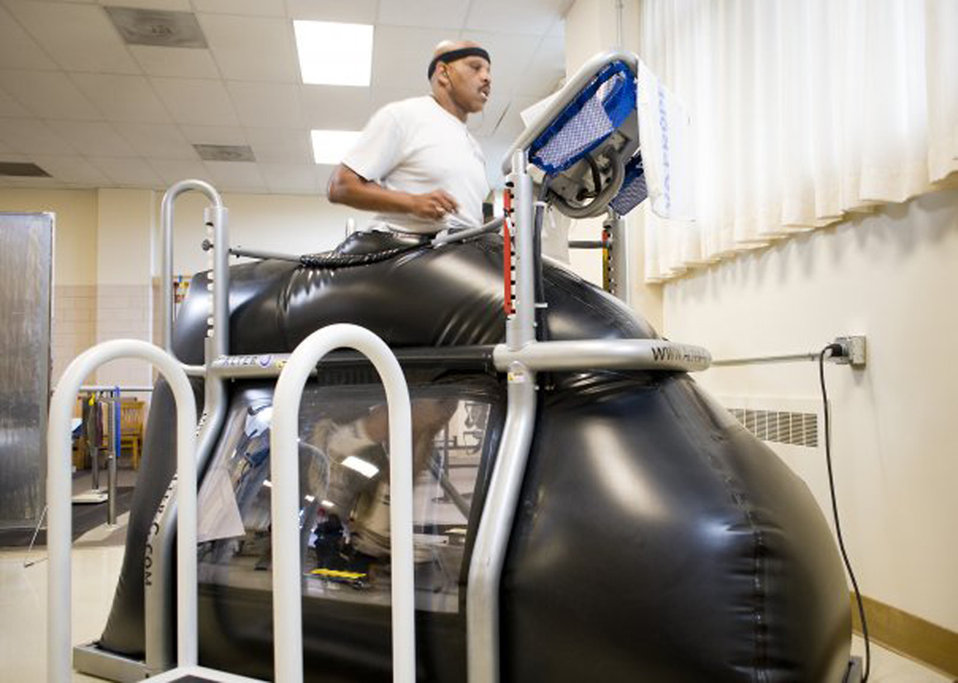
Anti-gravity treadmill

Retired Staff Sgt. Jesse Whitmier exercises in the NASA-developed